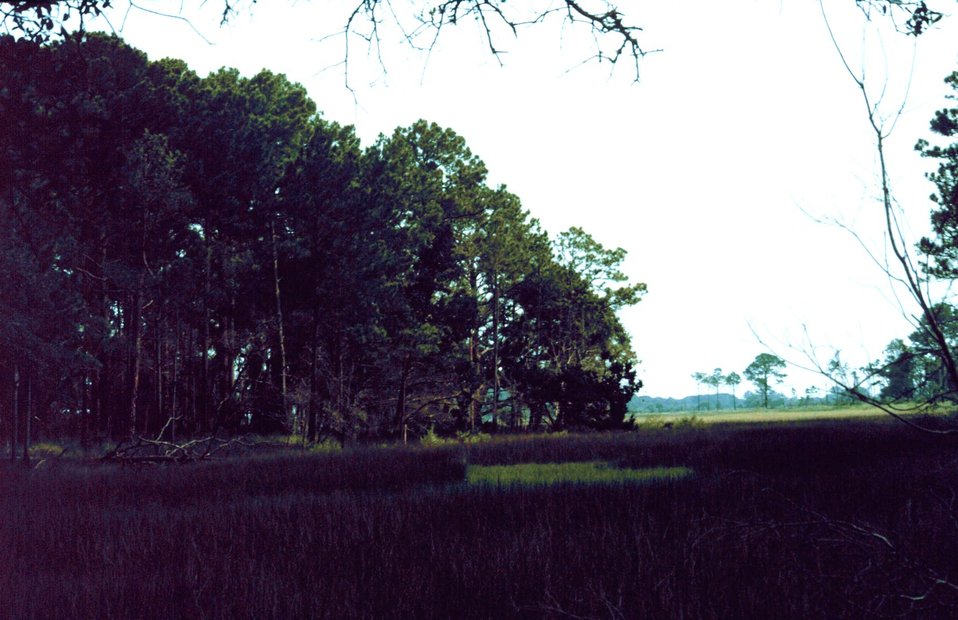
The transition between marsh and upland maritime forest.